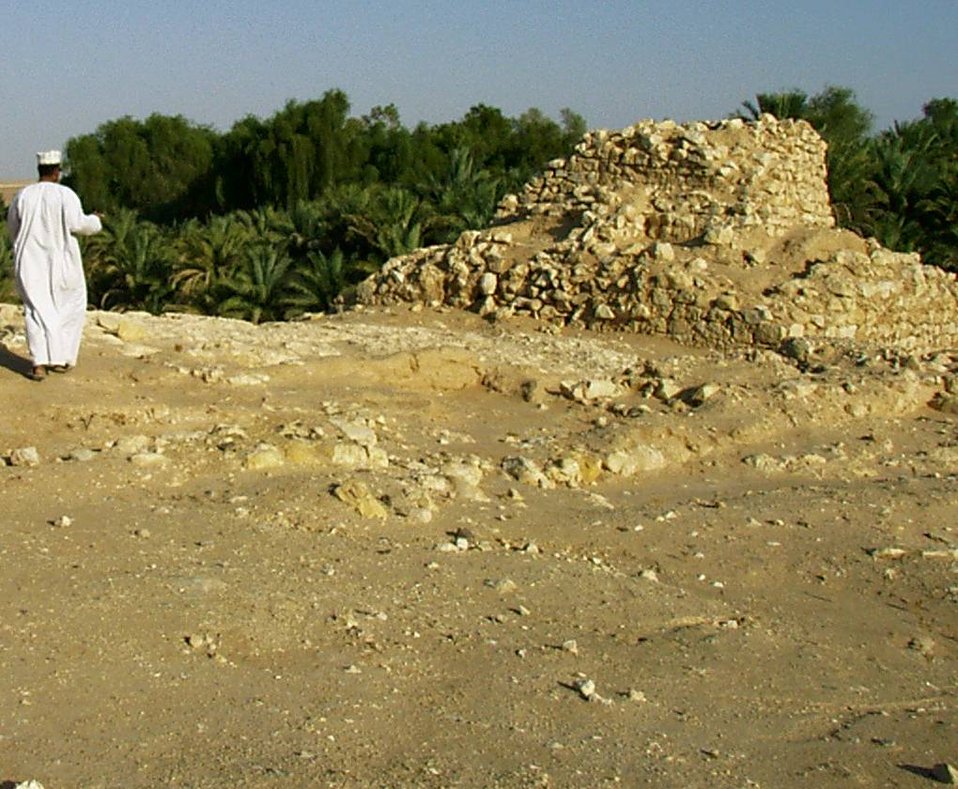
Deutsch: Ruinen des antiken Ubar